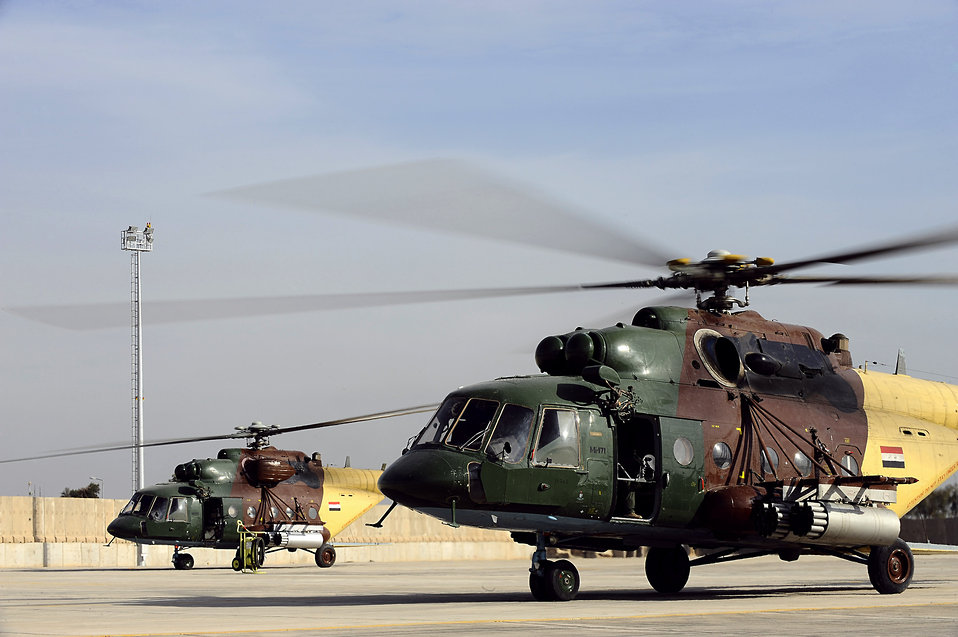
Iraqi aeromedical evacuation mission continues to evolve

Two Iraqi Mi-17 Hip Helicopters stand by Dec. 20 for an aeromedical evacuation mission from the Air Force Theater Hospital at Joint Base Balad, Iraq. Three Iraqi patients were transported from Balad to the 86th Combat Support Hospital in Baghdad. This was the second time the Iraqi air force has conducted an aeromedical evacuation from Balad.